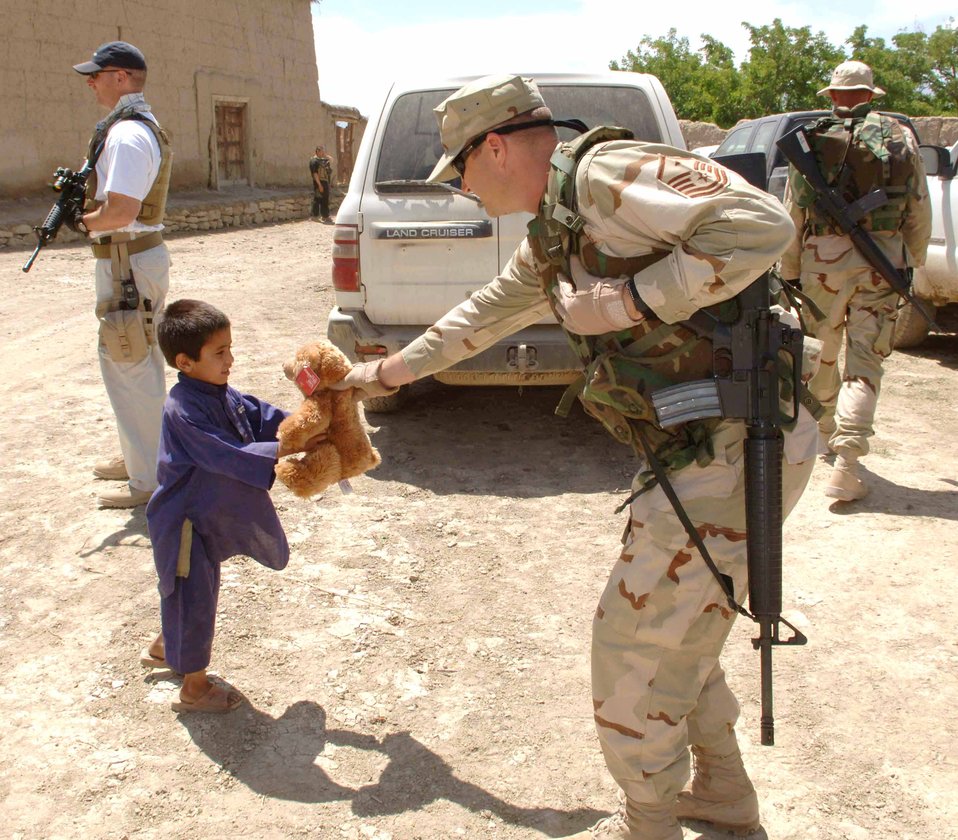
Reaching out

HAJJI KHAN BABA VILLAGE, Afghanistan -- Master Sgt. Thomas Clater hands a teddy bear to an Afghan boy during a recent adopt-a-village trip here. The program is designed to assist locals with infrastructure and fresh water, and provide school supplies and toys for children. Sergeant Clater is the 455th Expeditionary Maintenance Group first sergeant at nearby Bagram Air Base.